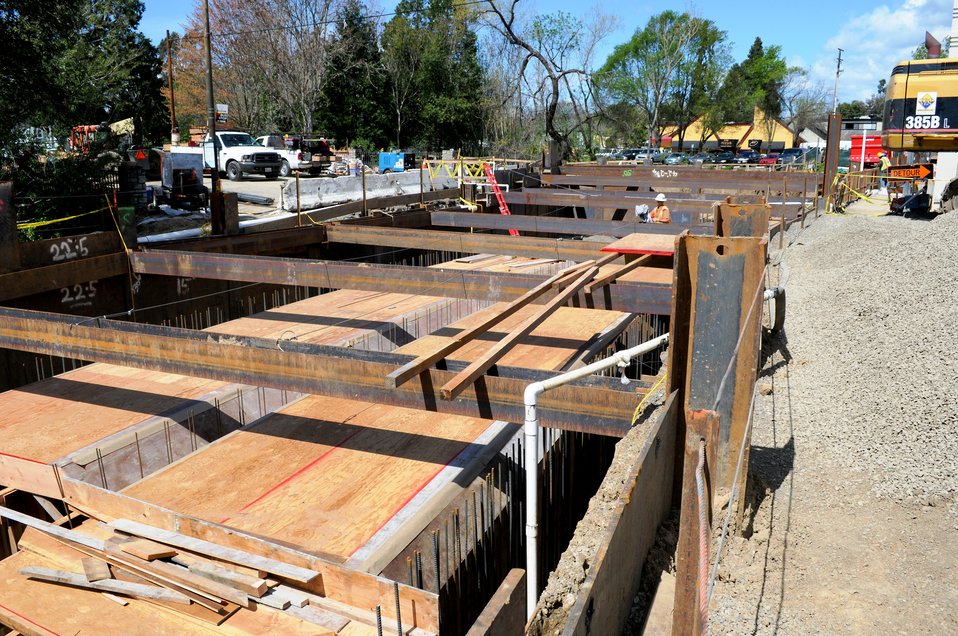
Reducing flood risk in Napa, Calif.

Construction continues on two double-barrel box culverts here April 8, 2011. The U.S. Army Corps of Engineers Sacramento District is installing the culverts as part of a project to reduce the risk of flooding from nearby Napa Creek. ProVen Management is the contractor building the culverts.
“These box culverts will give the creek a straight shot out towards the river,” Corps project manager Dave Cook said. In high water, Napa Creek often overtops and spills into adjacent neighborhoods, causing persistent flooding. The culverts will direct flood waters more quickly to the river and away from homes and businesses. The $14.8 million project, funded by the American Recovery and Reinvestment Act of 2009, is a joint effort of the Corps, the city of Napa, and the Napa Flood Control and Water Conservation District, to reduce flood risk for the city.